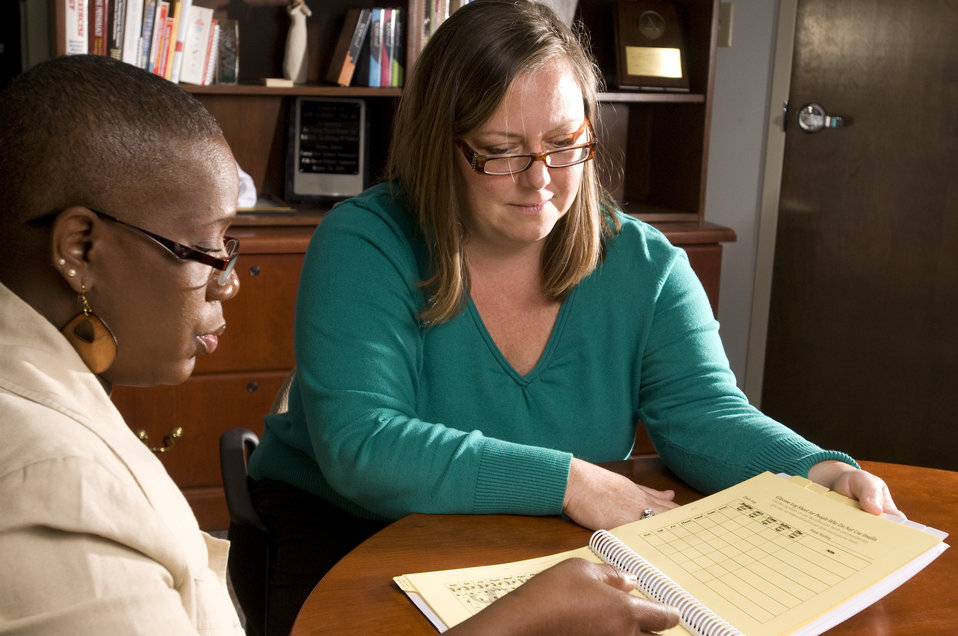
This image depicts a person with diabetes in the foreground listening to a community health worker familiar with the necessary proactive approach one must implement in order to maintain control over the detrimental effects of this disease. The health worker was providing answers to questions posed by the patient regarding actions she'd need to take, enabling her to lead a healthy, active life with diabetes.